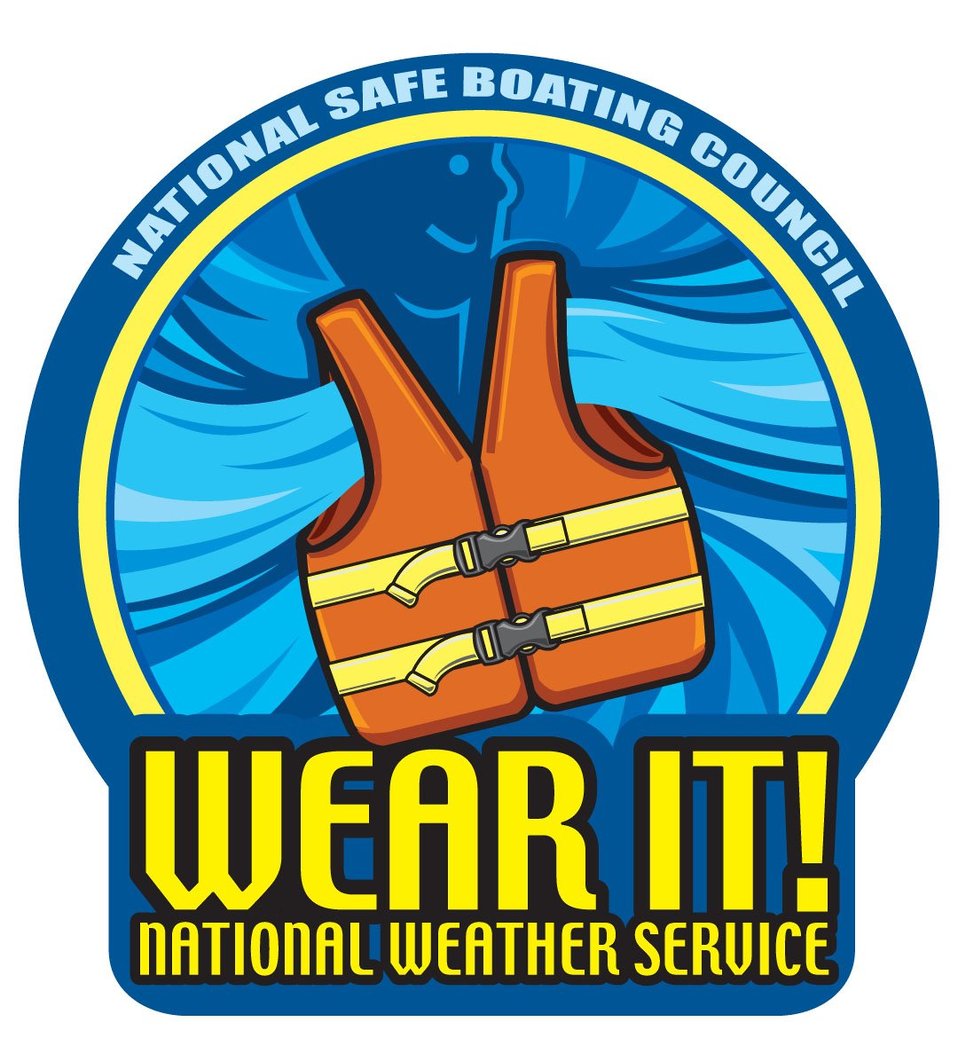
Poster encouraging use of life vests while boating. Produced as cooperative venture between National Weather Service and National Safe Boating Council.